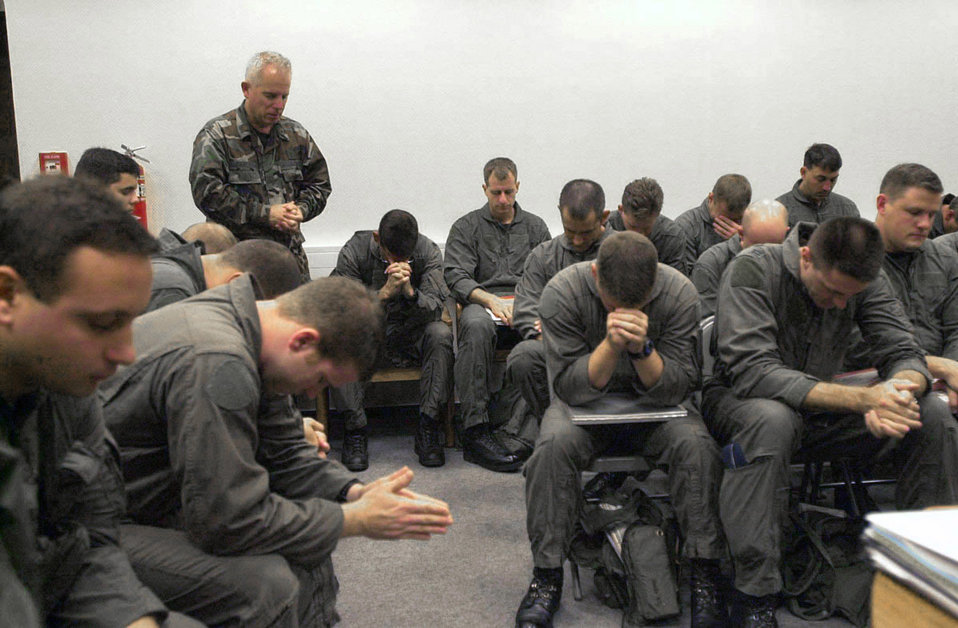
Praying Time

OPERATION ENDURING FREEDOM -- A U.S. Air Force chaplain leads crewmembers from Charleston C-17 CGlobemaster III pilots and air crews at Chaarleston Air Force Base, S.C., pray prior to takeoff. Airmen from Charleston continue high altitude drops of Humanitarian Daily Rations from their C-17 Globemaster IIIs somewhere over northern Afghanistan. The C-17 dropped 17,220 HDRs. About a half million HDRs have been dropped into Afghanistan since the humanitarian relief effort began.